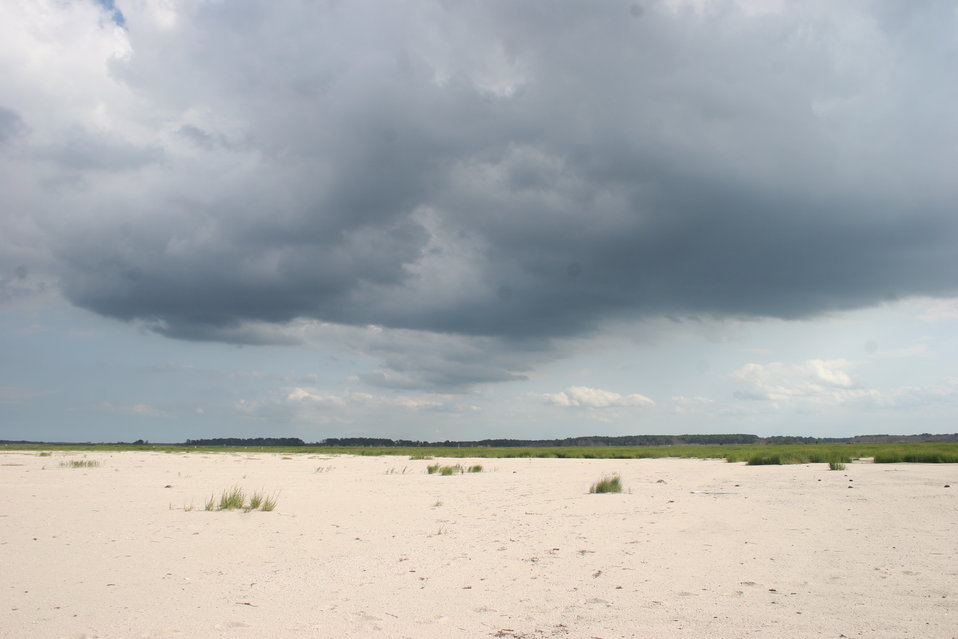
Prime Hook NWR